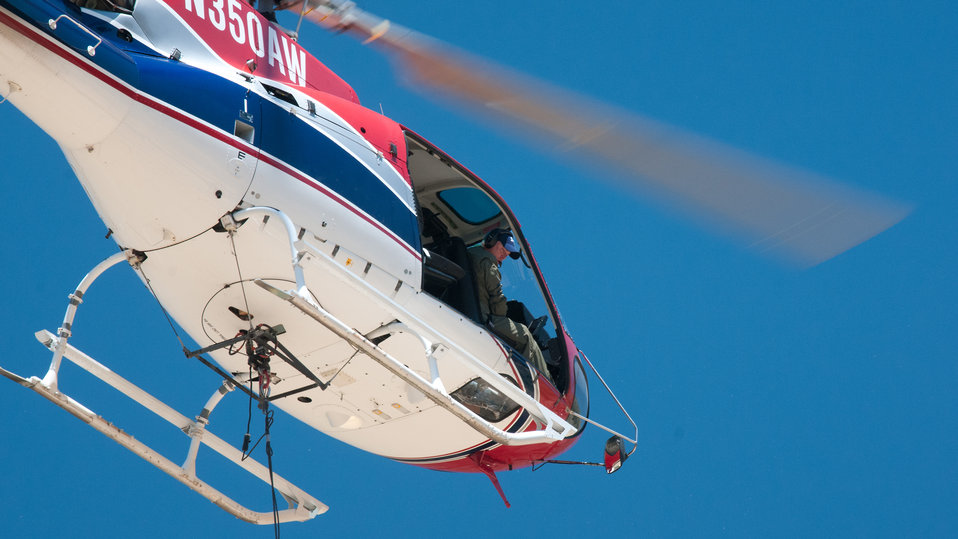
Mountain Air Chief Pilot Tim Booth, a U.S. Marine Corps veteran, uses his keen depth perception and piloting skills to hovers over a 4-man load crew below who are attaching a cargo net with 1,400 pounds of straw to a remotely controlled release system, on Friday, July 20, 2012, at Seaman Reservoir, near Fort Collins, Colo., during the continuing aerial application of straw to mitigate soil and ash runoff from the mountainous terrain leading to Seaman Reservoir, drinking water resource for the City of Greeley. The A-Star Model B (3-blade rotor) aircraft is holding a 100-foot cable pickup point at the reservoir spillway. He will then lift the load of certified straw for aerial dispersal onto barren, burned out tributary lands surrounding the reservoir. Forest service lands received straw, while private and other lands receive a seed mix and straw to promote ground cover plant growth on ash-covered lands. In total, 1,800 tons of straw will be applied during the 14-day operation. One quarter of the cost was paid by the City of Greeley and the U.S. Department of Agriculture funded the remainder. The Hewlett Gulch Fire was started by a camper’s alcohol stove, on May 14, at the saddle of a picturesque mountain ridge along the Hewlett Gulch Trail of Poudre Canyon, in the Roosevelt National Forest, 60 miles north of Denver. At it’s more than 400 firefighters were battling fires being pushed by 50 mph winds that helped blacken over 12-square-miles of dry ground cover, brush and trees. Many of the trees were already dead and tinder dry from beetle-kill. The water in the reservoir remains clean and clear, while downstream water flow has gone from famous Colorado clear water to nearly black flows of water heavily laden with ash, silt, and burnt debris that recent thunderstorms have already washed down from the mountainsides.